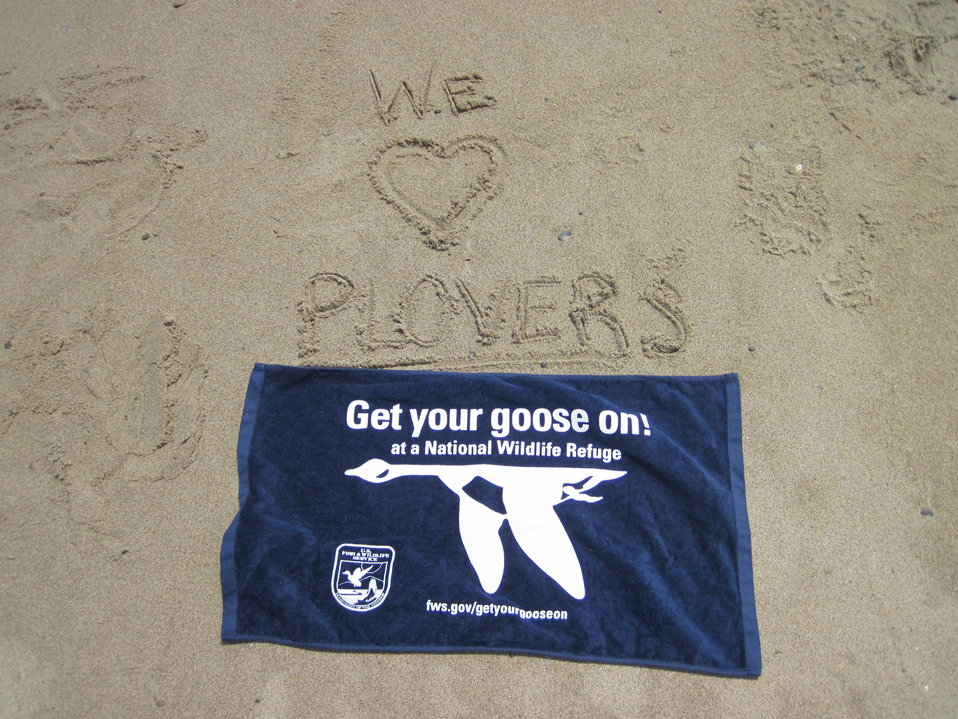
Get Your Goose On!

Who loves plovers? Everyone!